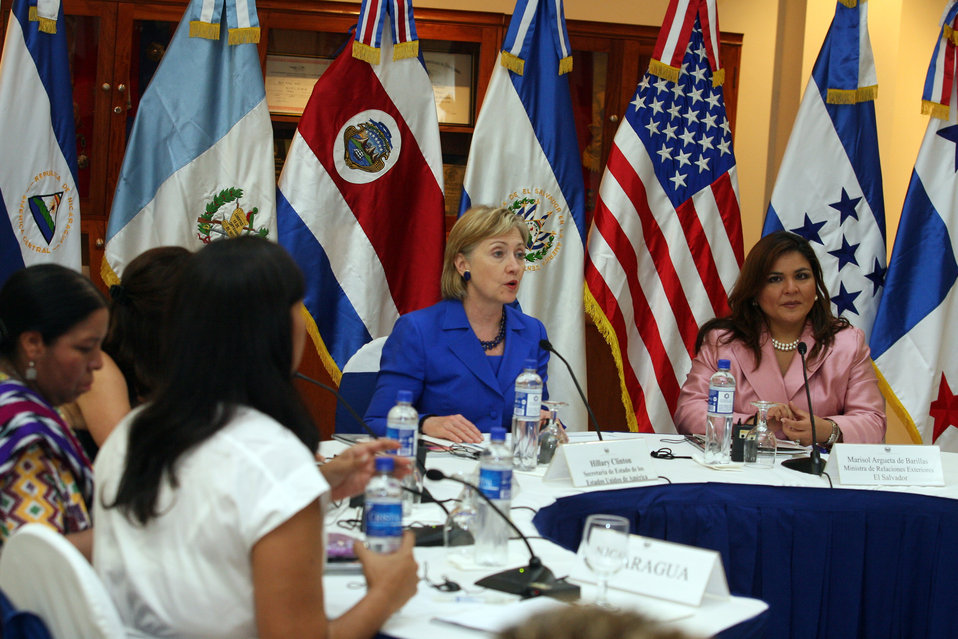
Secretary Clinton Moderates Women's Roundtable Discussion

Over 40 women participated in a roundtable discussion with moderators U.S. Secretary of State Hillary Rodham Clinton and Salvadoran Foreign Minister Argueta at the Foreign Ministry in San Salvador, El Salvador May 31, 2009. The forum provided an opportunity to discuss women’s essential role in recovering from the economic crisis and methods to combat the scourge of poverty and insecurity in the region.